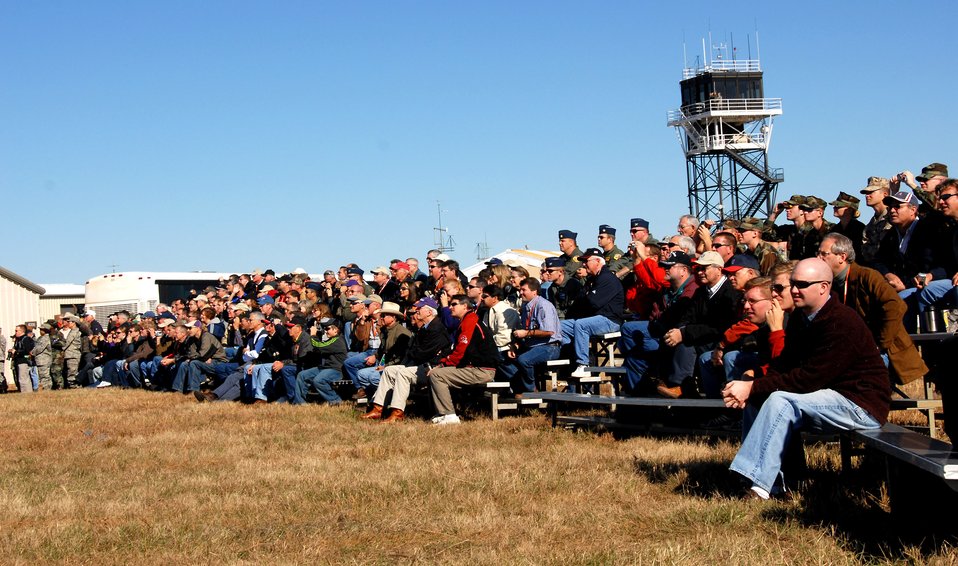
Hawgsmoke 2008

News media, community leaders and distinguished visitors at the Smoky Hill Range near Salina, Kan., watch A-10 Thunderbolt IIs make strafing and bombing runs Oct. 16 as part of Hawgsmoke 2008. Fourteen A-10 squadrons from across the Air Force are competing in Hawgsmoke 2008 Oct. 14 to 18. Hawgsmoke is a biennial A-10 bombing and aerial gunnery competition, which was hosted this year by the Air Force Reserve Command's 442nd Fighter Wing based at Whiteman Air Force Base, Mo.